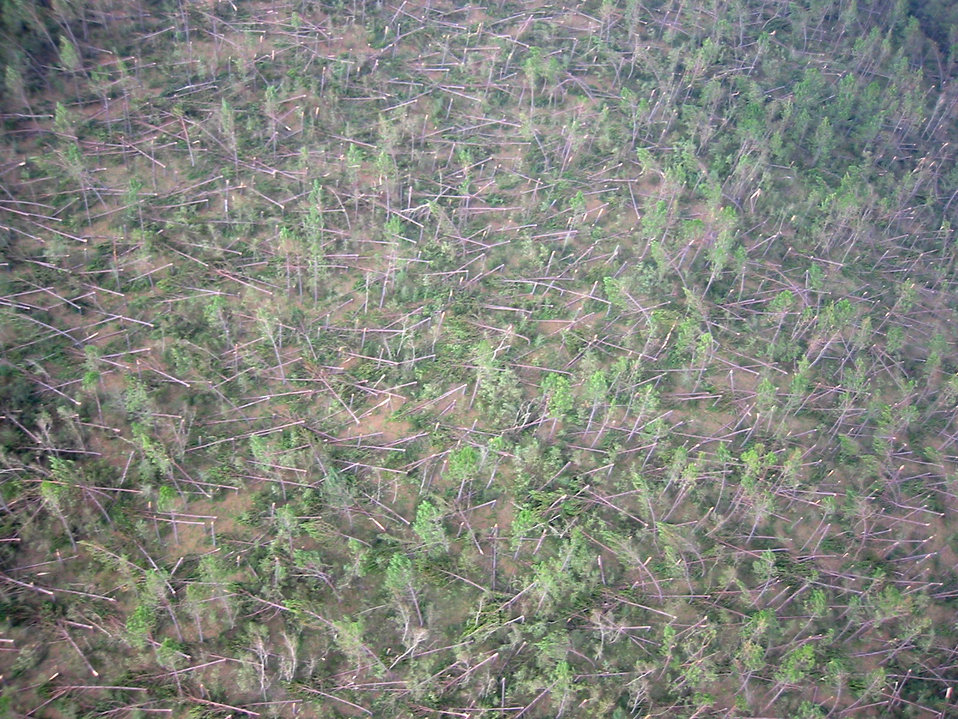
Search and rescue

RANDOLPH AIR FORCE BASE, Texas -- Trees near Silsbee, Texas lie bent and broken after Hurricane Rita plowed through. The trees were in an area searched by the 349th Air Expeditionary Group. The search-and-rescue unit, staging from here, is made up of active-duty and Reserve forces.